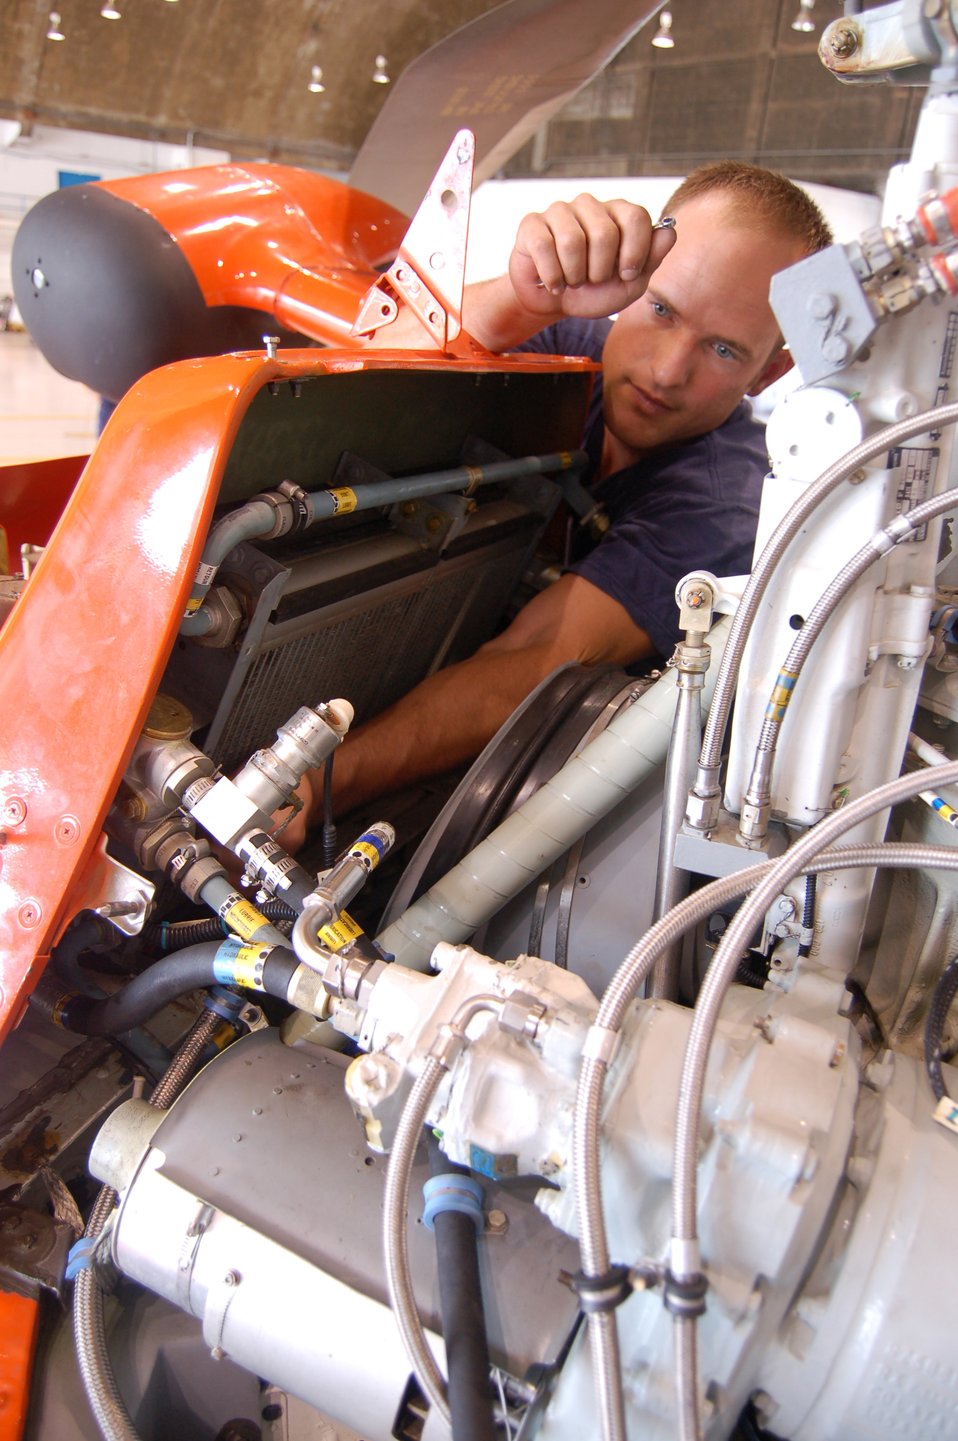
Blue uniforms continue command over Puerto Rico sky

Coast Guard Petty Officer 3rd Class William Restall replaces oil cooler brackets on an HH-65C Dolphin helicopter March 20 at Coast Guard Air Station Borinquen, Puerto Rico. Petty Officer Restall is an aircraft maintenance technician. Coast Guard Air Station Borinquen is based at what used to be Ramey Air Force Base, which closed in 1973.